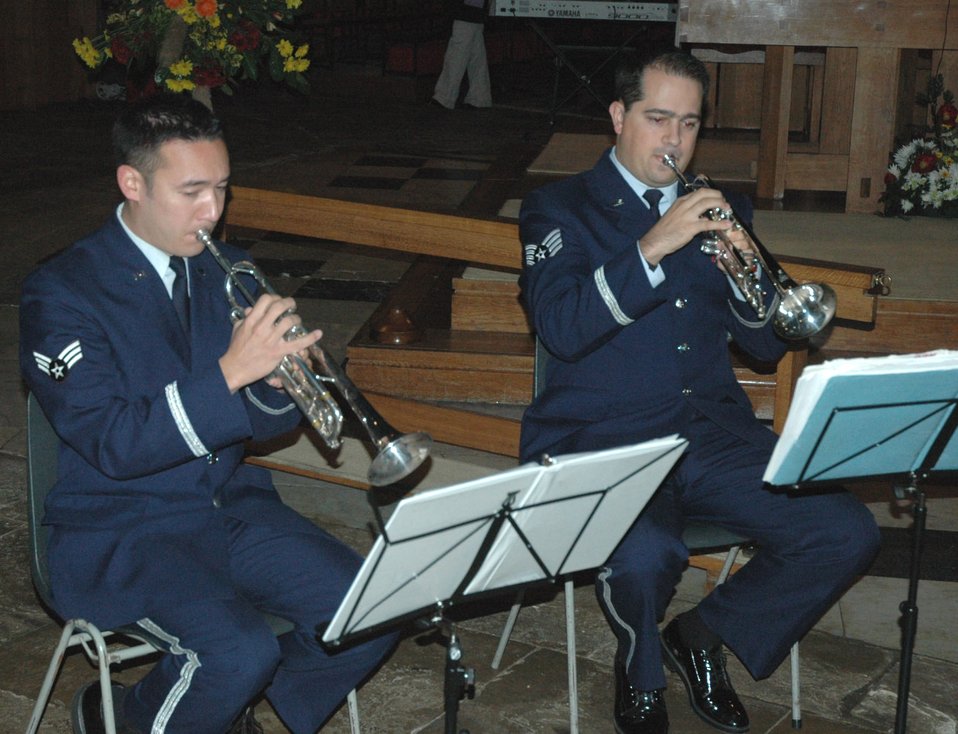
English chaplains help Americans give thanks

Senior Airman Pat Brush (left) and Staff Sgt. Chris Cronsell play at the annual Thanksgiving service at Ely Cathedral in the United Kingdom. The two Airmen are members of the U.S. Air Forces in Europe Five Star Brass Band.